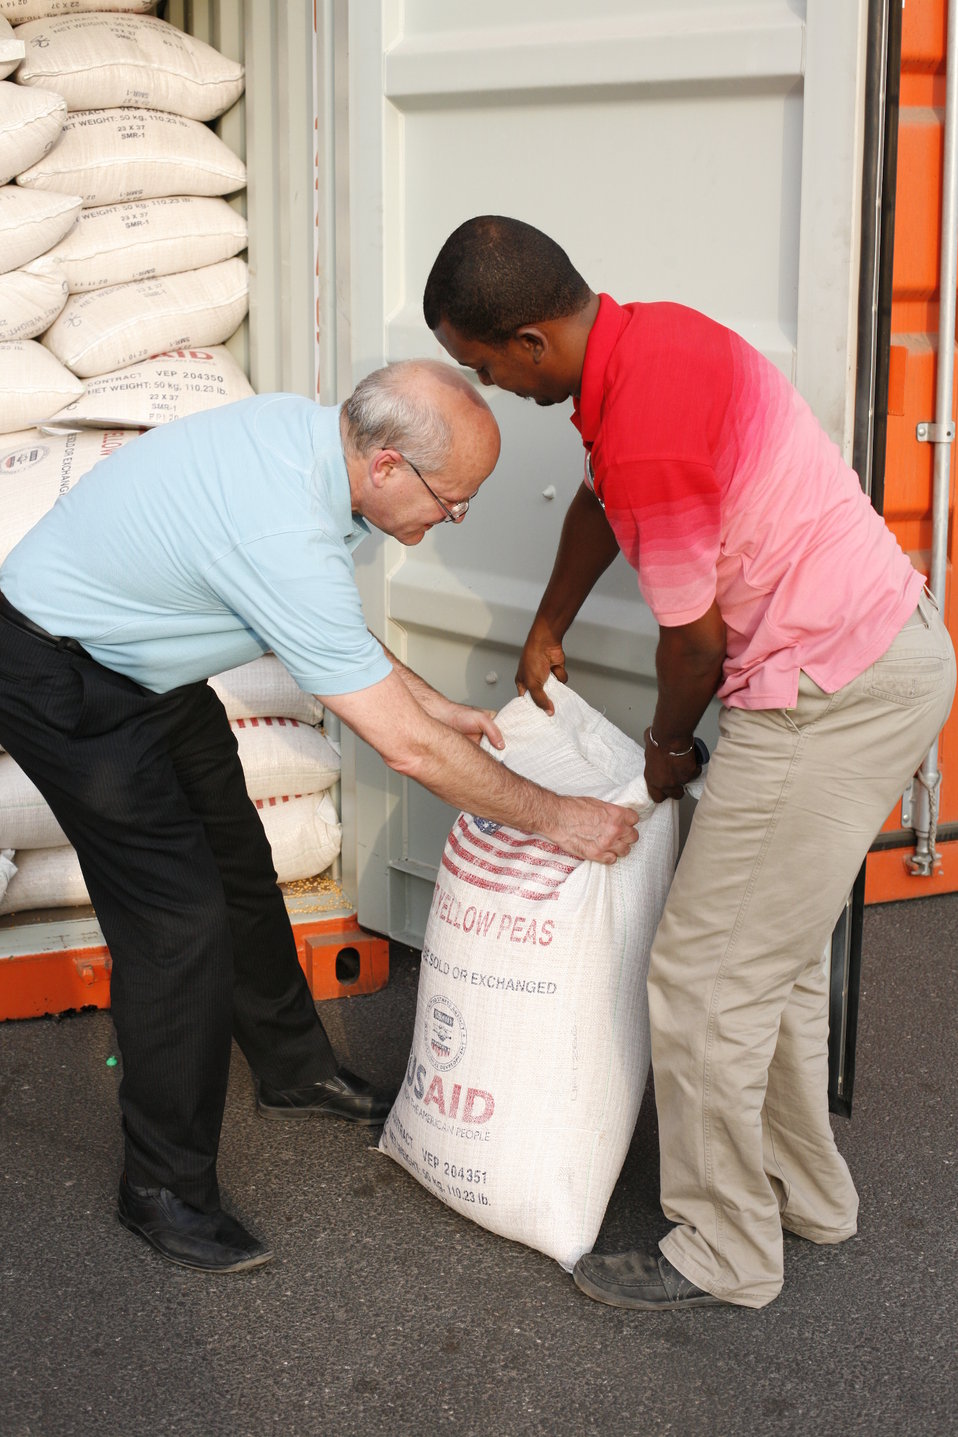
USAID Deputy Administrator Steinberg Reviews U.S. Food Aid in Djibouti

U.S. Agency for International Development (USAID) Deputy Administrator Donald K. Steinberg, left, reviews U.S. food aid in Djibouti, Republic of Djibouti, on July 8, 2011.